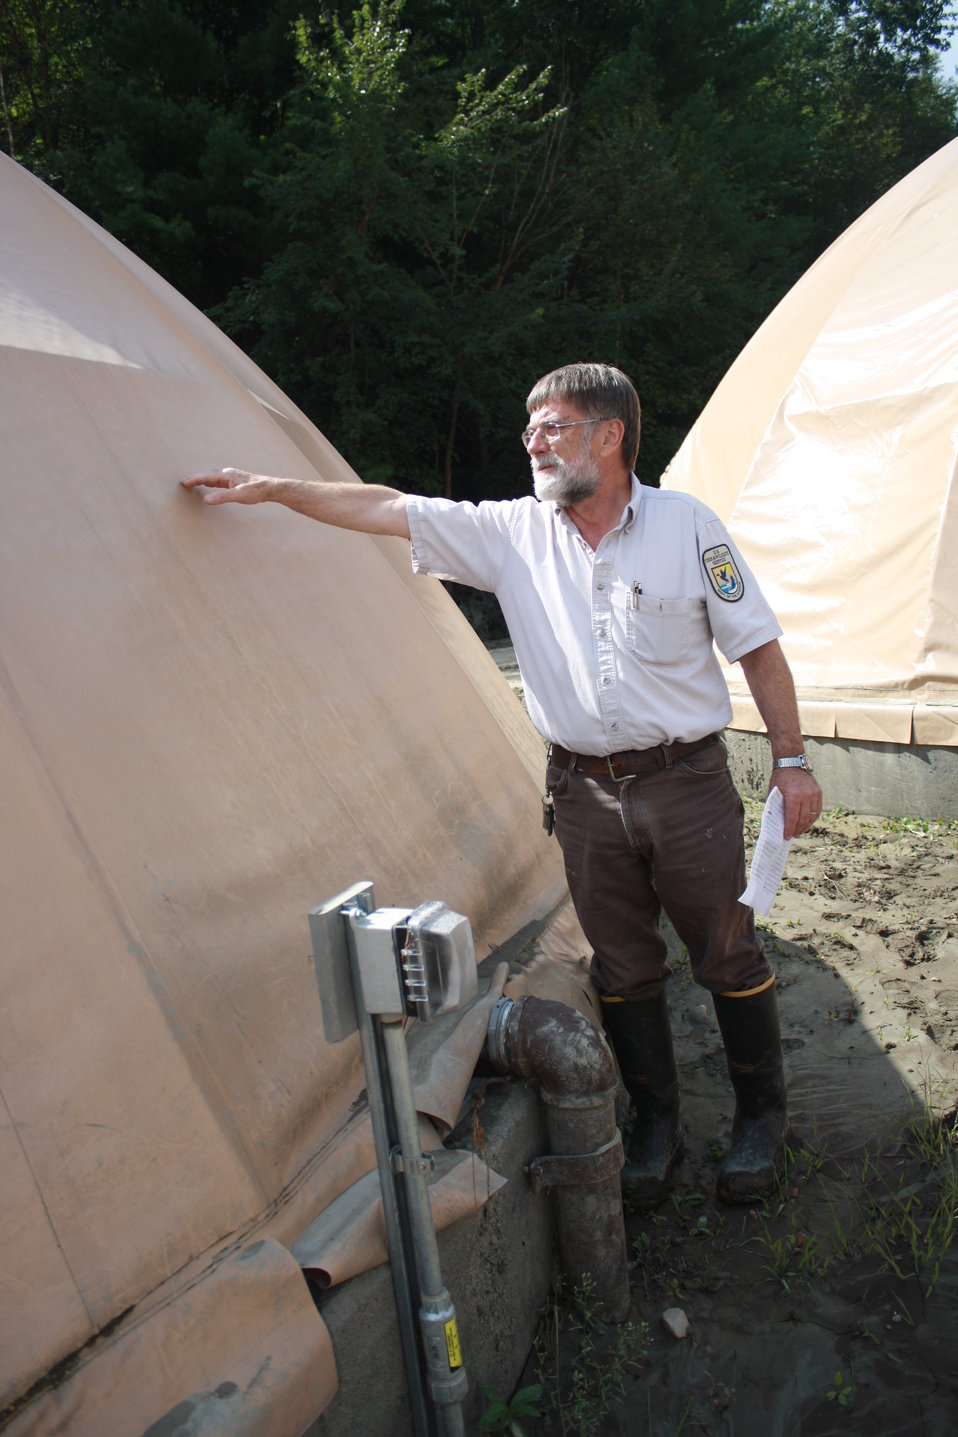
High water mark on circular pool

White River National Fish Hatchery project leader Ken Gillette shows high water mark from Hurricane Irene flood event on the side of a circular fish rearing pool.